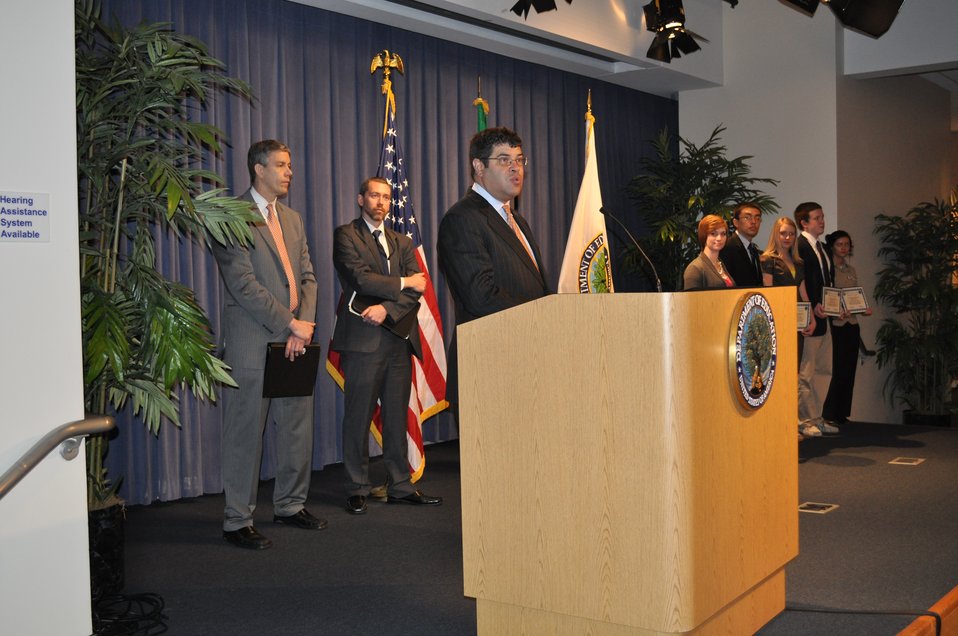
Education, Treasury Recognize High-Scoring Students in the 2010-11 National Financial Capability Challenge

Deputy Secretary of the Treasury Neal Wolin speaking at an event recognizing high-scoring students on this year's National Financial Capability Challenge.